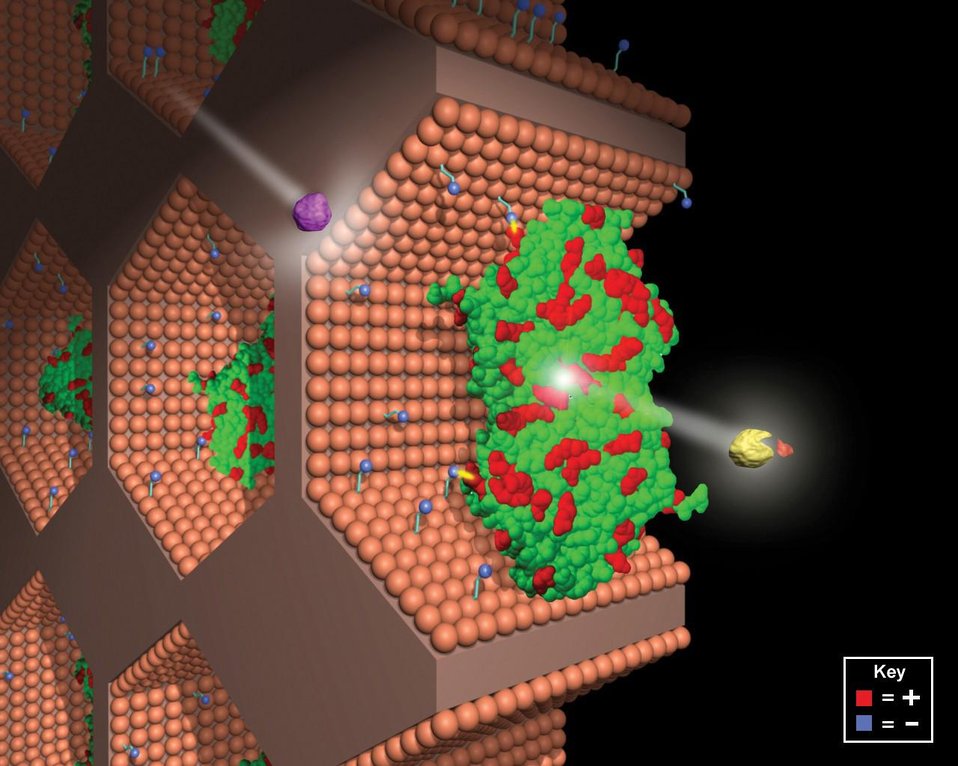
THIS GRAPHIC, CREATED AT THE PACIFIC NORTHWEST NATIONAL LABORATORY, SHOWS THE ENZYME ORGANOPHOSPHORUS HYDROLASE (OPH) EMBEDDED IN A SYNTHETIC NANOMEMBRANE (MESOPOROUS SILICA).

LEARNING ABOUT THE INNER WORKINGS OF MICROBES AND THEIR DIVERSE INVENTORY OF MOLECULAR MACHINES CAN LEAD TO THE DISCOVERY OF WAYS TO ISOLATE AND USE THESE COMPONENTS TO DEVELOP SYNTHETIC NANOSTRUCTURES THAT CARRY OUT SOME OF THE FUNCTIONS OF LIVING CELLS.